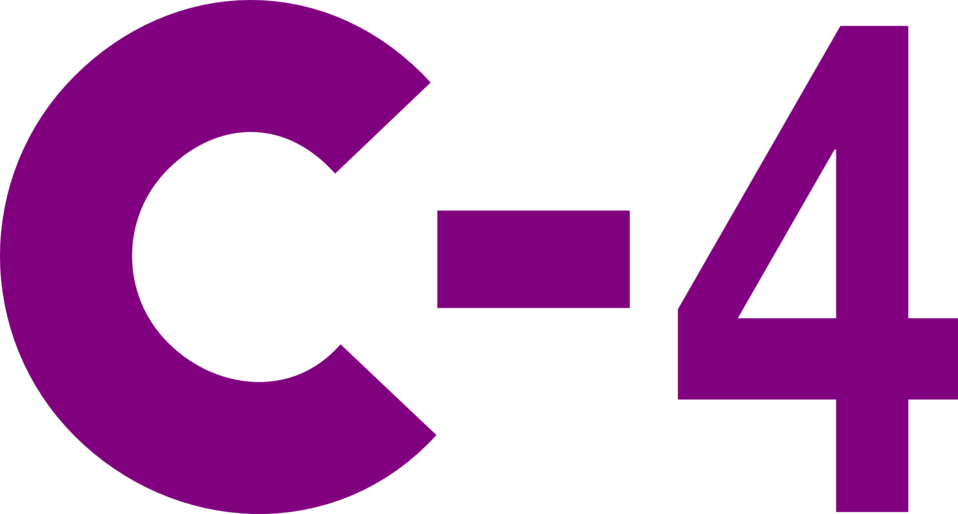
Español: Logo de la línea C-4 de Cercanías Sevilla.